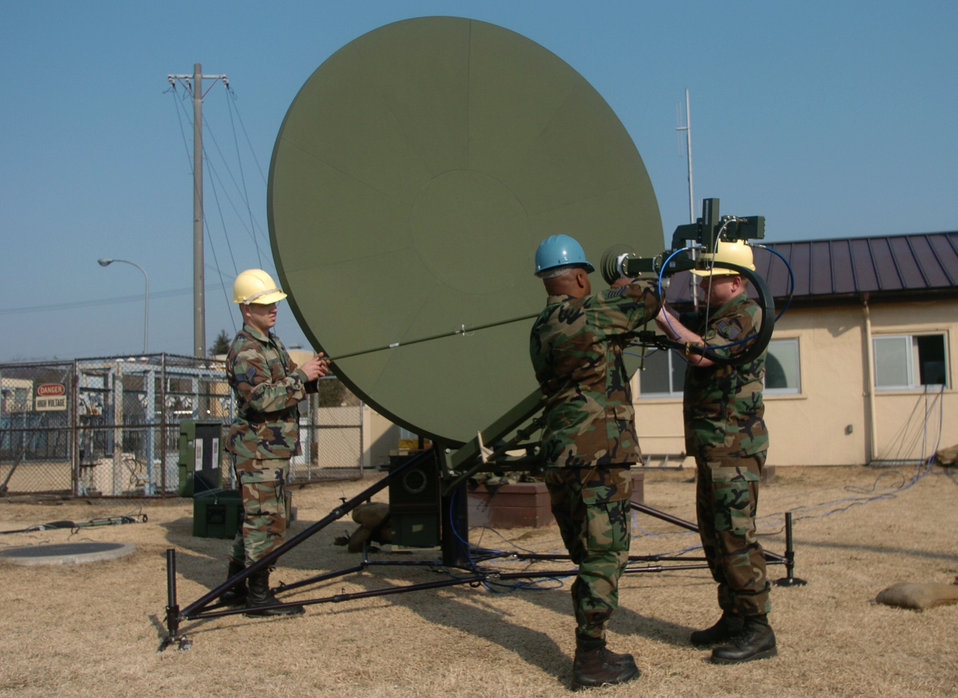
COM on guys

YOKOTA AIR BASE, Japan -- (From left) Tech Sgts. John Harshman and Douglas Jefferson and Senior Airman David Gonzales set up a mobile tactical super-high frequency satellite communications terminal during training at here. The terminal provides reach-back, long-haul communications from deployed locations to defense information network systems. The Airmen are satellite wideband and telemetry maintenance technicians assigned to the 374th Communications Squadron at nearby Camp Zama.